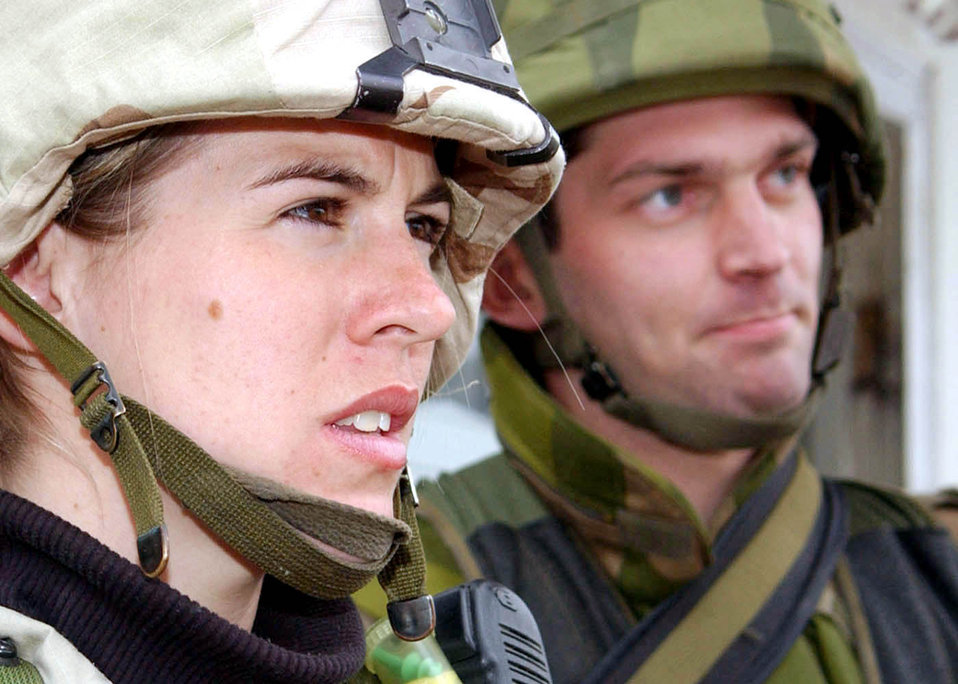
Ganci security

OPERATION ENDURING FREEDOM -- Senior Airman Rebecca Fleck and Norwegian 2nd Lt. Jorgen Eidsaether watch a vehicle drive onto Ganci Air Base, Kyrgyzstan. Airmen are working with security forces from European partners to secure the base.